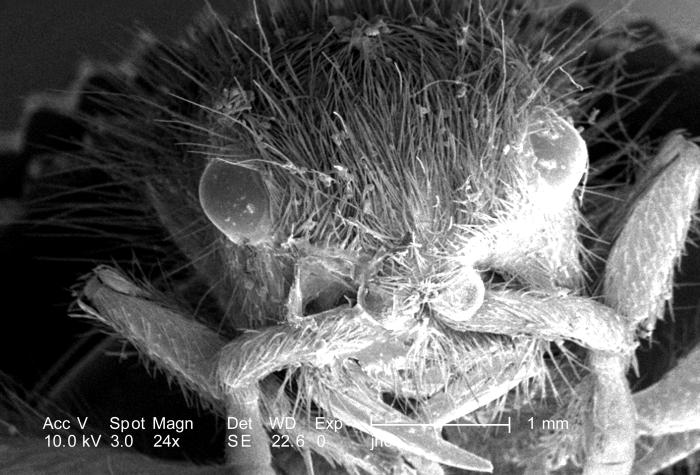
At a low magnification of only 24X, this scanning electron micrograph (SEM) showed the head region from an anterior view of a female velvet ant, Dasymutilla sp.. Note the two laterally positioned eyes, the anterior pair of antennae, each attached to the head by a rounded "scape", the numerous 'hairs' or setae adorning almost all exterior surfaces, and the jointed legs, from which the insects Phylum Arthropoda is derived, i.e., Arthro = 'jointed', and poda 'leg'. Also see PHIL 4638, 6363, and 6364 for photographs of the ant revealing its coloration, and velvety covering of external chitinous hairs